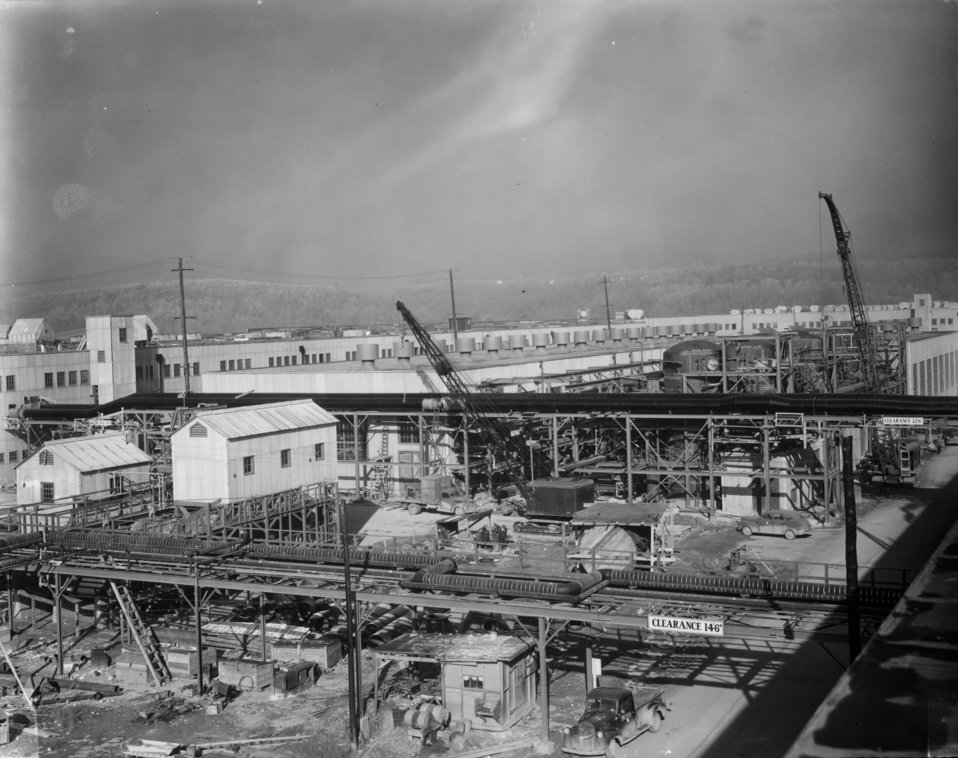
K-25 at Oak Ridge